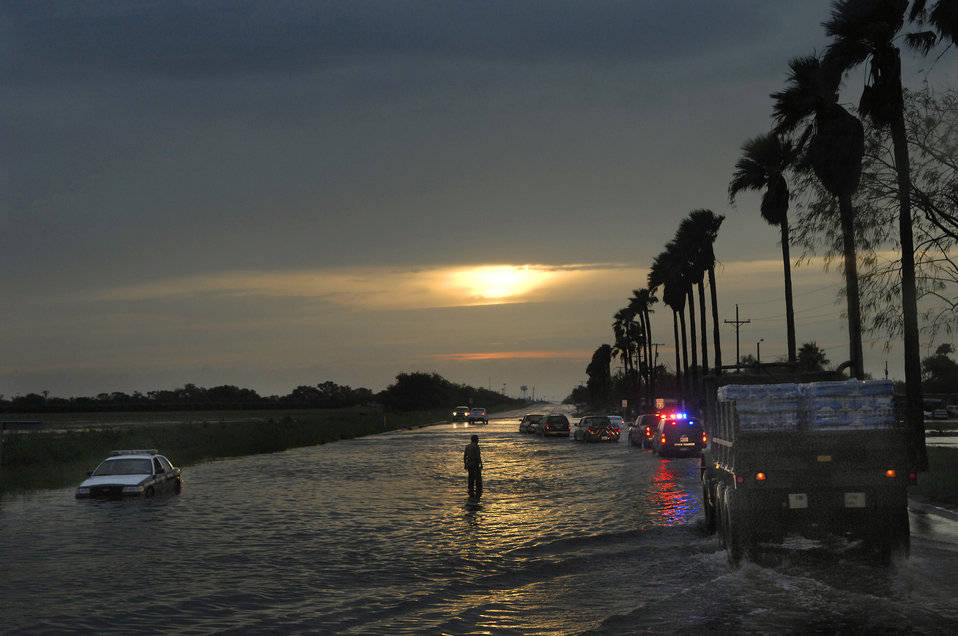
Hurricane Dolly

A Texas Task Force 1 convoy rolls through the aftermath of Hurricane Dolly July 24 towards South Padre Island, Texas. The convoy was composed of Army and Air Force National Guard members along with civilian emergency response team.